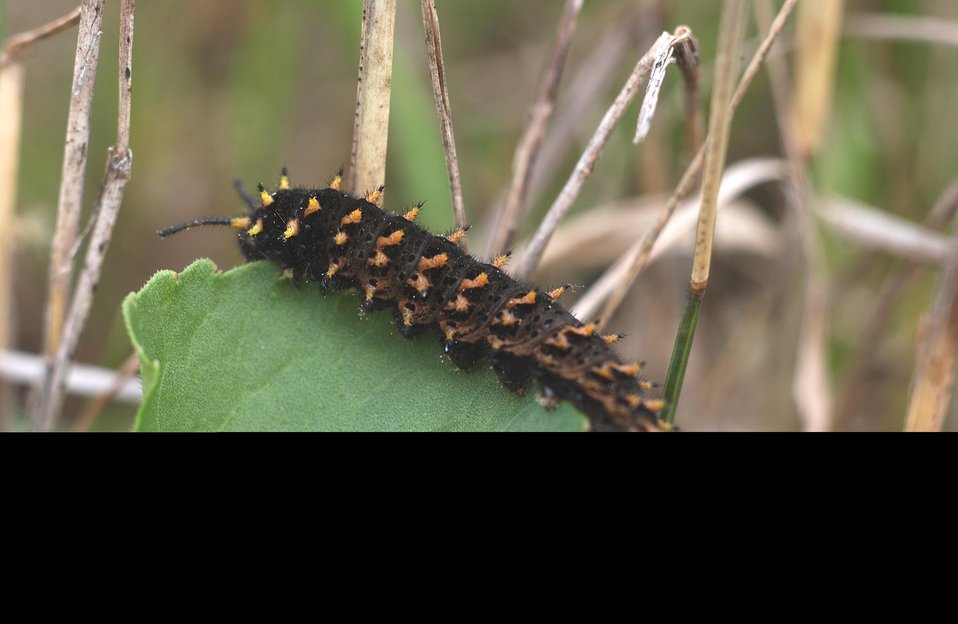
SILVER BORDERED FRITILLARY BUTTERFLY CATERPILLARS BEING INTRODUCED AT FERMILAB.

IN AN EFFORT TO RECOGNIZE AND PRESERVE ITS PRAIRIE HERITAGE, FERMILAB ENCOURAGES NATURAL PRAIRIE LIFE AND VEGETATION. THE FERMI NATIONAL ACCELERATOR LAB ADVANCES THE UNDERSTANDING OF THE FUNDAMENTAL NATURE OF MATTER AND ENERGY BY PROVIDING LEADERSHIP AND RESOURCES FOR QUALIFIED RESEARCHERS TO CONDUCT BASIC RESEARCH AT THE FRONTIERS OF HIGH ENERGY PHYSICS AND RELATED DISCIPLINES.